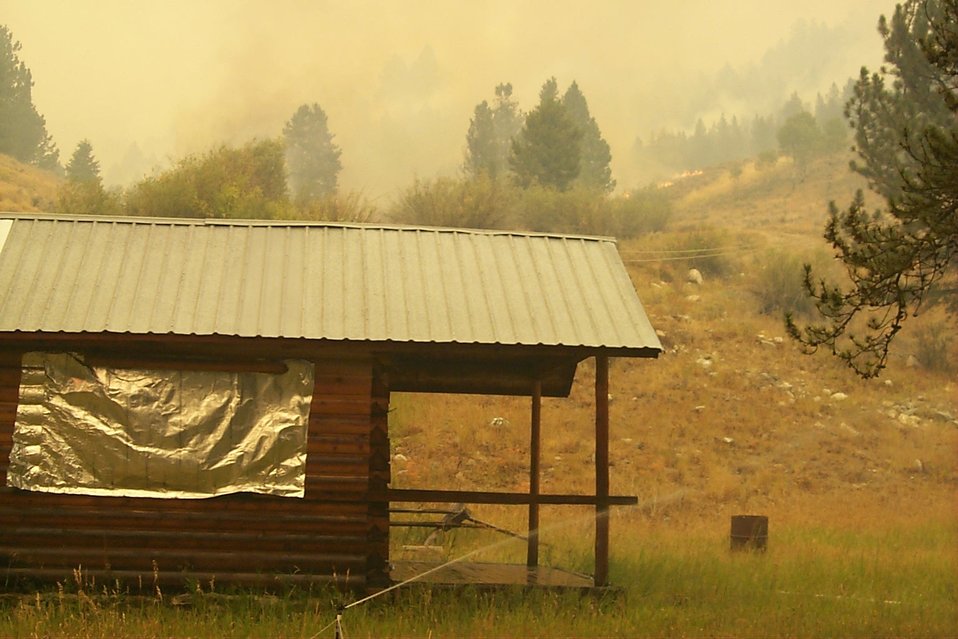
Fire retardant measures Urban interface Fire Clearwater Fire Salmon Field Office USRD Upper Snake River District